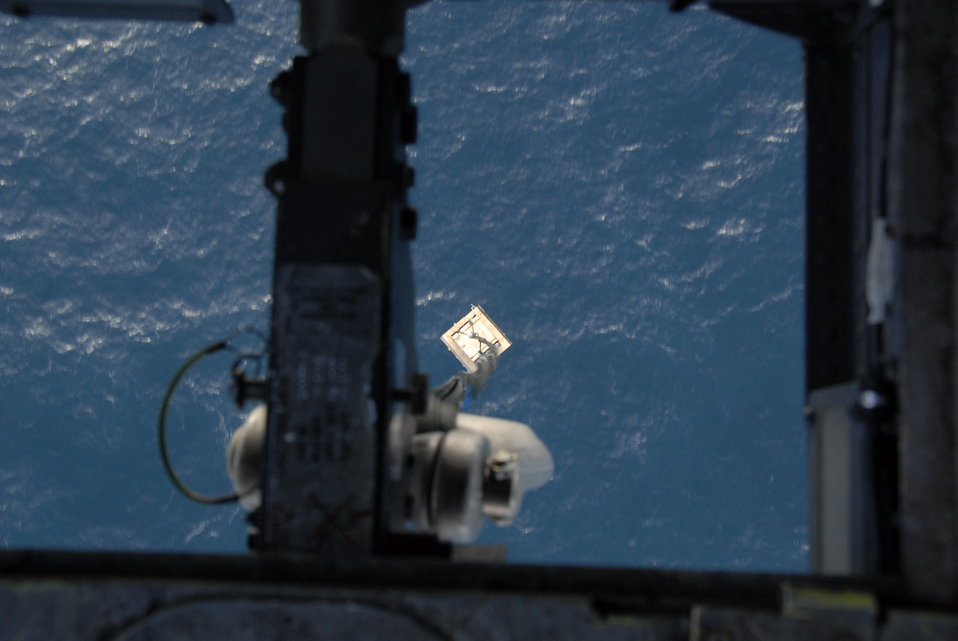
FARALLONS BATTERY MISSION

A crate of new photovoltaic batteries is sling-loaded to an HH-60G Pave Hawk Feb. 17. The helicopter and its crew, from the California Air National Guard's 129th Rescue Wing at Moffett Federal Airfield, Calif, are supporting the U.S. Fish and Wildlife Service by transporting the batteries to power a lighthouse and workshop at the FWS research facility on the Farallon Island, which sits some 30 miles west of San Francisco.